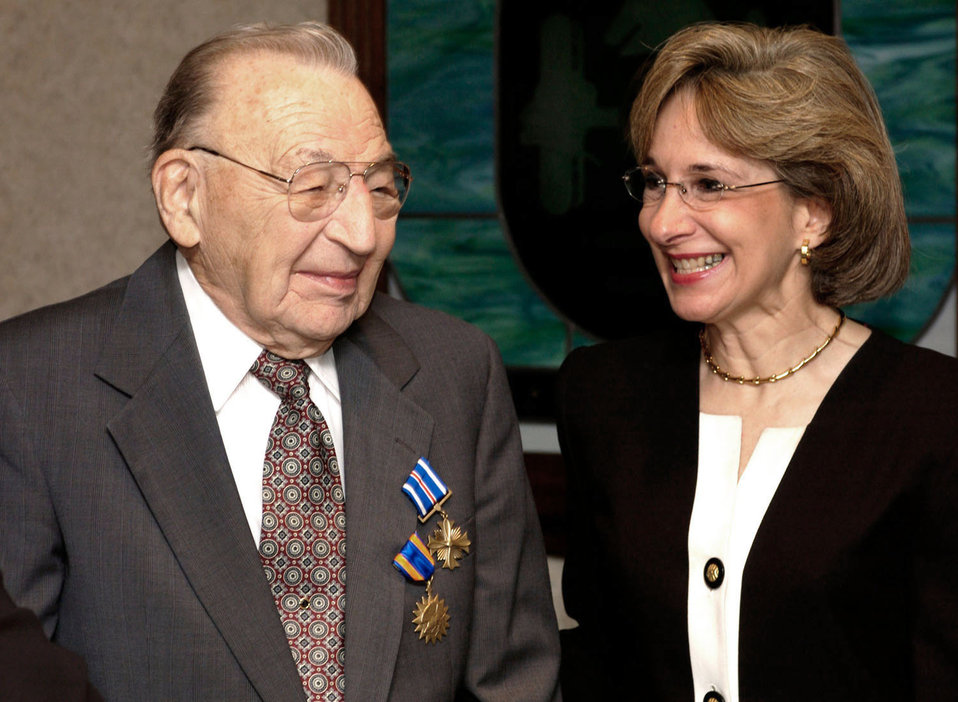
WW II vet receives DFC, Air Medal

LANGLEY AIR FORCE BASE, Va. -- First Lt. Ken Kinsinger, a World War II-era B-24 pilot, enjoys a moment with his daughter, Sandy Naber, during a medal presentation ceremony here recently. During the ceremony, Lieutenant Kinsinger received the Distinguished Flying Cross and Air Medal he earned in 1944. Like many of the more than 16 million Americans who served in World War II, Lieutenant Kinsinger left post-war military service before his medals were presented.